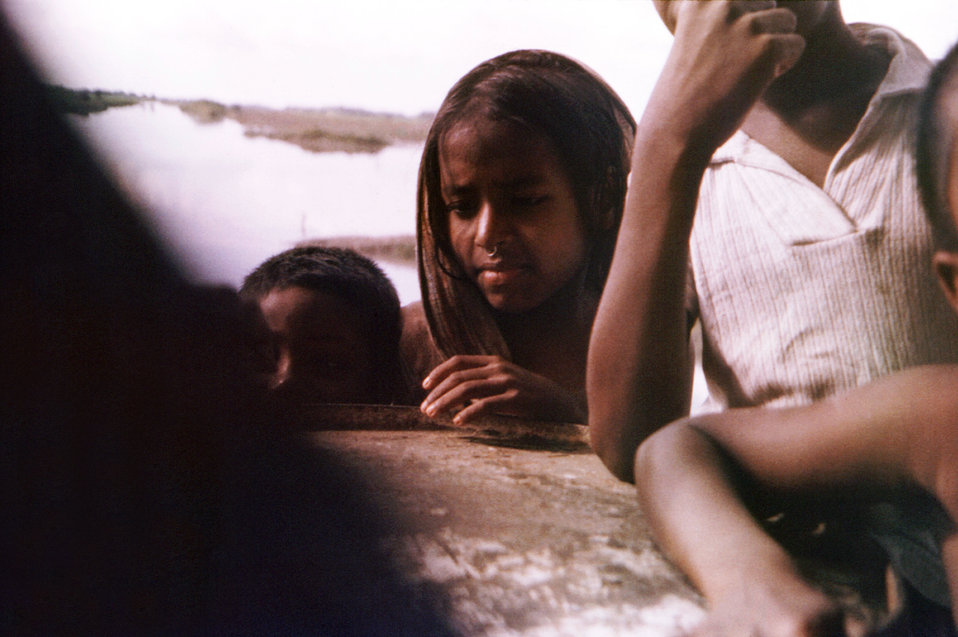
This September, 1975 photograph, captured these children inside the 'Lord Harding Bazaar', as they were peering over a 44-gallon gasoline drum. This bazaar, or marketplace, was the location of a 1975 smallpox outbreak.